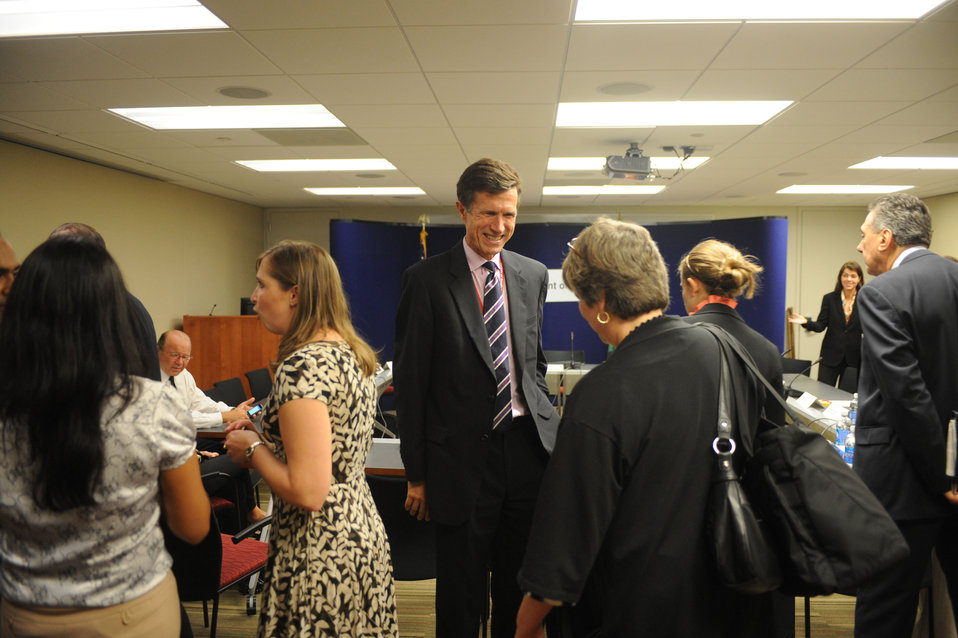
Assistant Secretary Blake Speaks With Participants

Assistant Secretary of State for South and Central Asian Affairs Robert O. Blake speaks with participants at the Higher Education Roundtable in Washington, D.C., on September 16, 2010.